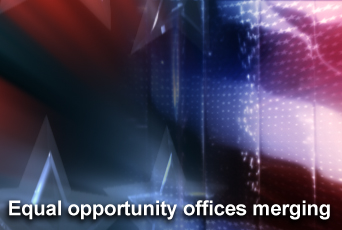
Air Force to merge equal opportunity organizations

The military equal opportunity and equal employment opportunity offices will merge in January 2008, Air Force officials announced.